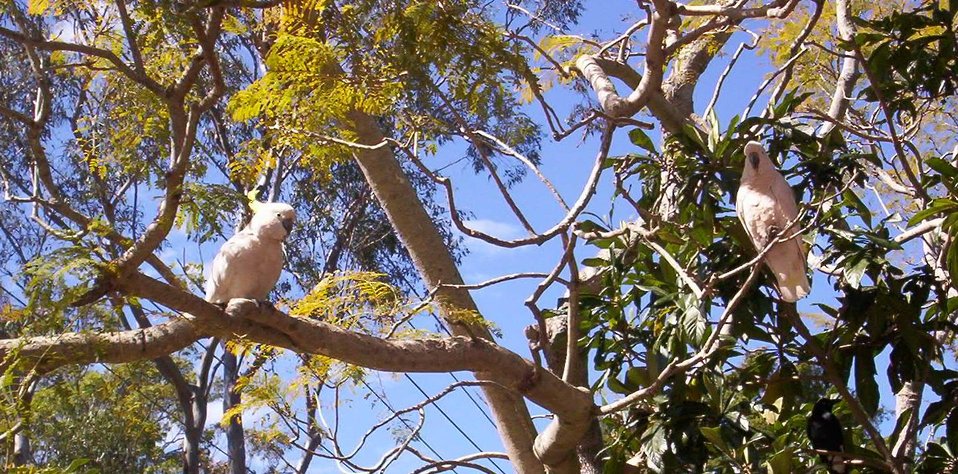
Cacatua galerita Sulphur-crested Cockatoos in a tree. This photo was taken in August, 2007 at Mount Nebo in Queensland, Australia